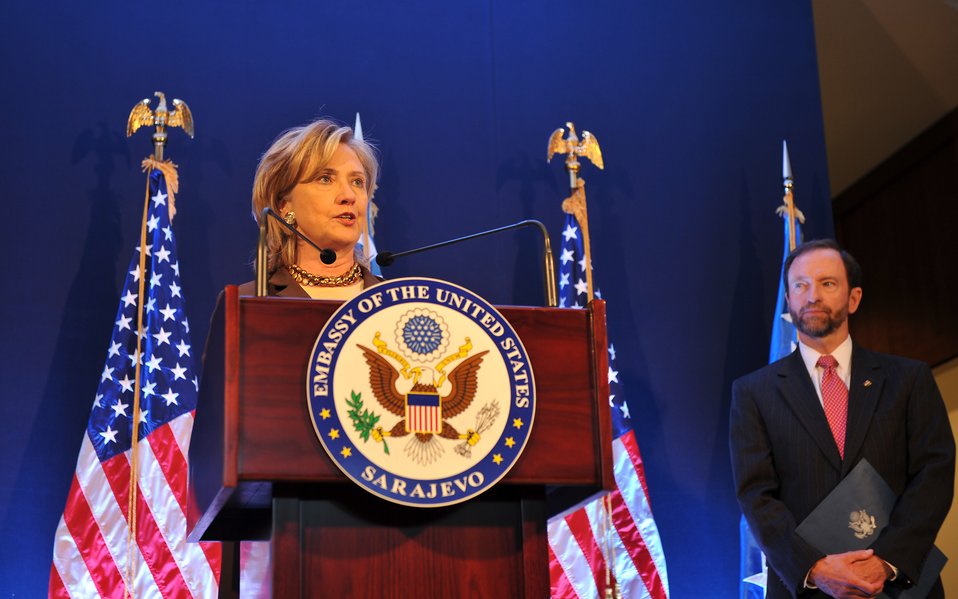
Secretary Clinton Delivers Remarks at the Opening of the New Embassy Compound Ceremony

U.S. Secretary of State Hillary Rodham Clinton, with U.S. Ambassador to Bosnia and Herzegovina Ambassador Patrick S. Moon, delivers remarks at the ceremony for the new embassy compound in Sarajevo, Bosnia and Herzegovina, on October 12, 2010.